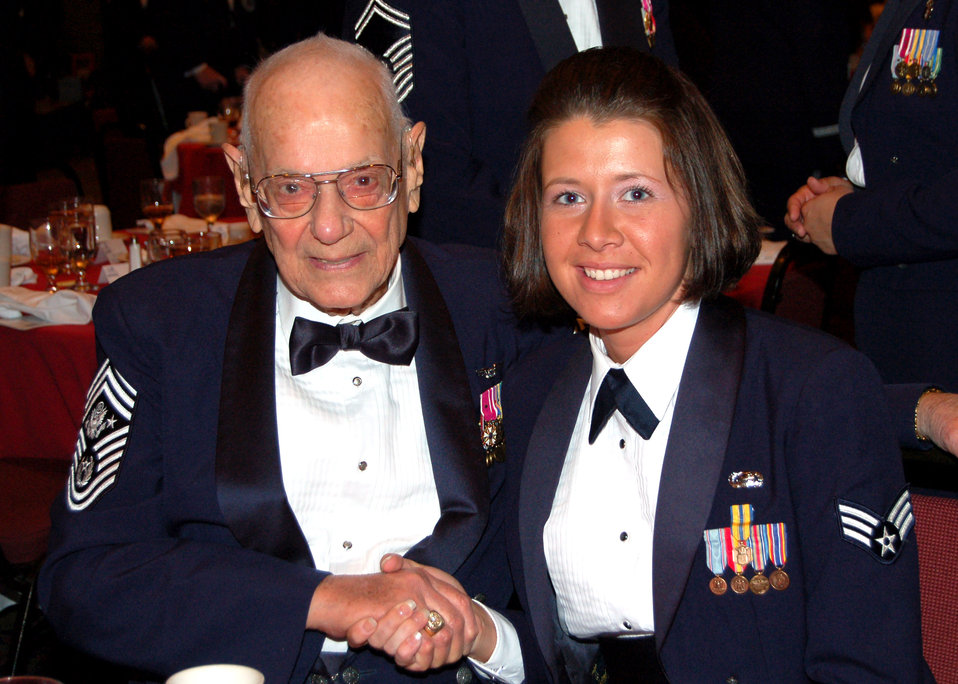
Airmen recognize impact of enlisted heritage

Senior Airman Natalie Napier gets her picture taken with Chief Master Sgt. of the Air Force Paul Wesley Airey during intermission of the Senior Enlisted Leaders Conference Heritage Dinner July 26 in Montgomery, Ala. The event was a celebration of the Air Force's 60th Anniversary and the 40th Anniversary of the inception of the office of the chief master sergeant of the Air Force. Airman Napier is assigned to Maxwell Air Force Base, Ala.